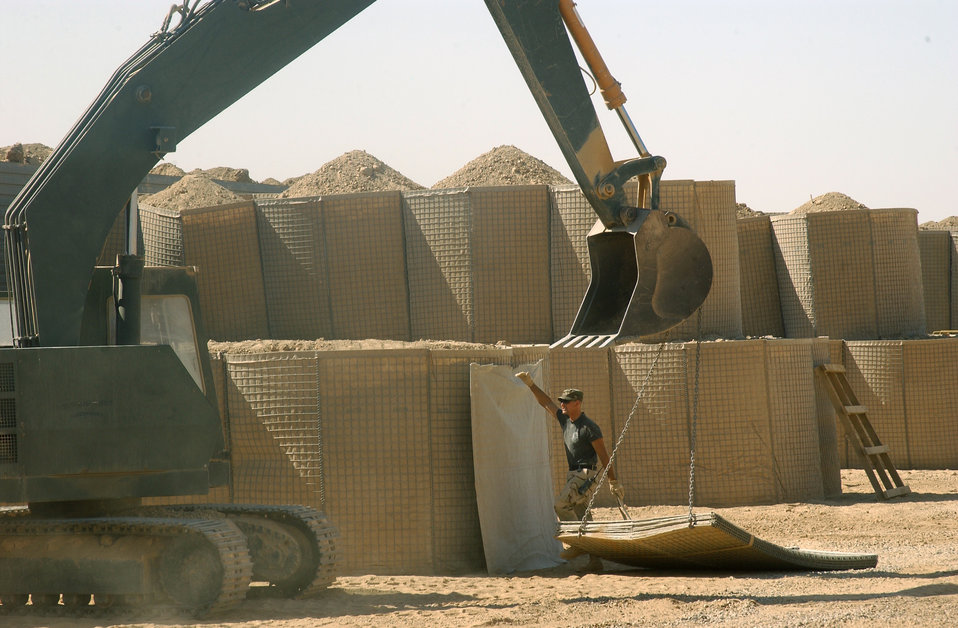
Ammo storage

BALAD AIR BASE, Iraq -- Staff Sgt. Tyler Weisgram signals Senior Airman Keith Jones to move a barrier into place at a future ammunitions site here. Both Airmen are assigned to the 332nd Expeditionary Civil Engineer Squadron and are deployed from Yokota Air Base, Japan.